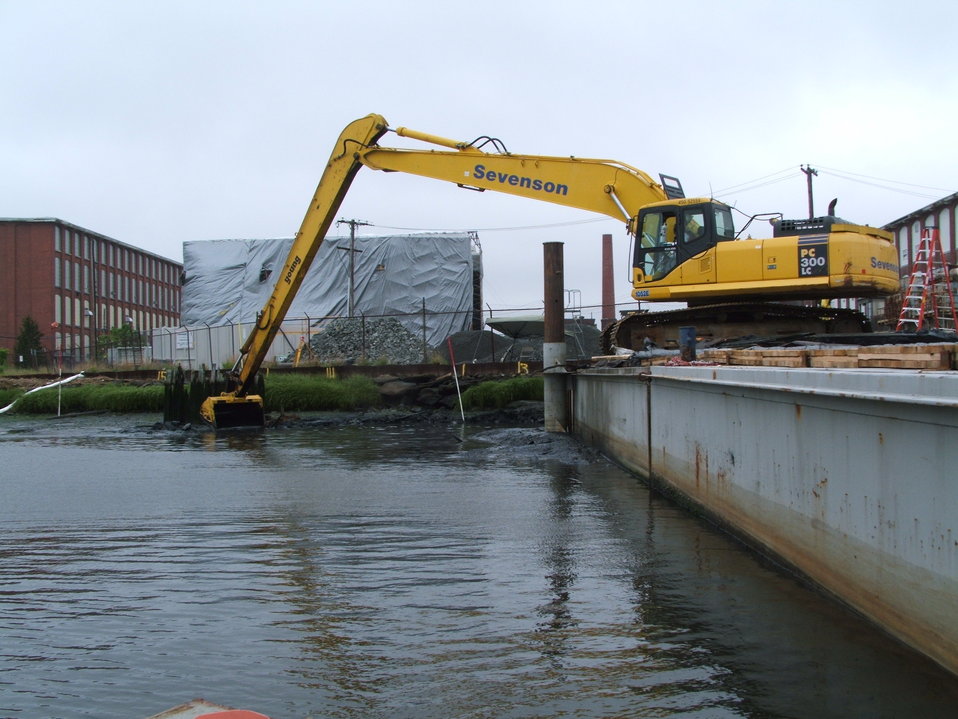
Spring 2008, Targeted cleanup near Aerovox shoreline

From June to July in 2008 EPA removed about 8,500 cubic yards of highly contaminated sediment from the shoreline along the vacant Aerovox Mill. This area was prioritized due to high levels identified during earlier sampling work.

EPA used some of the limited funding that was available for the 2008 cleanup season for this targeted project. Contrary to what is typically removed at the bottom of the harbor, the sediment and shoreline soil here contained volatile organic compounds in addition to high levels of PCBs. As a result, this sediment had to be handled separately from the rest of the dredged material. It is temporarily, but safely being stored in a lined storage cell at the Sawyer Street processing facility.